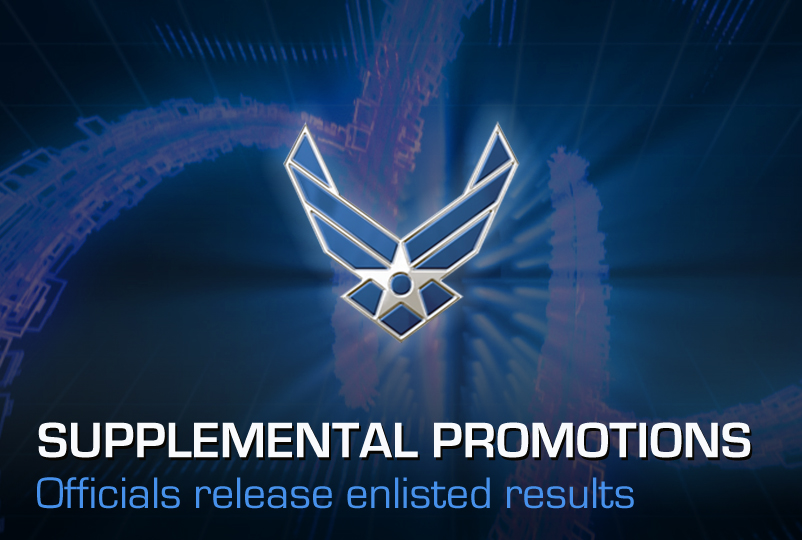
Enlisted supplemental promotions